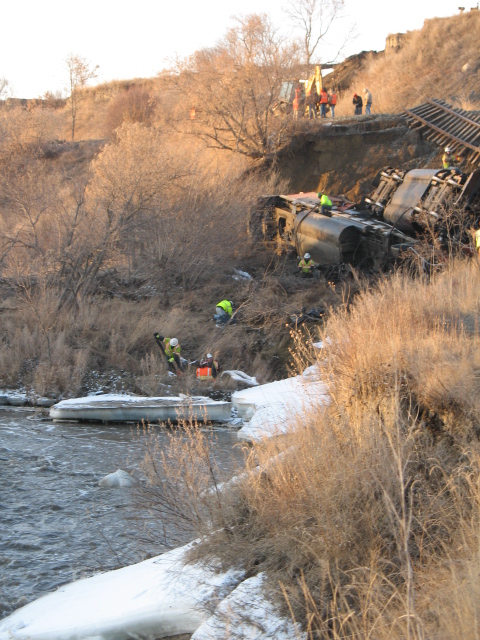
Preventing Diesel Spill

Environmental Contaminants Specialists respond to an overturned train. The specialists work to prevent diesel from running into Turtle Creek, a tributary of the Missouri River in North Dakota.